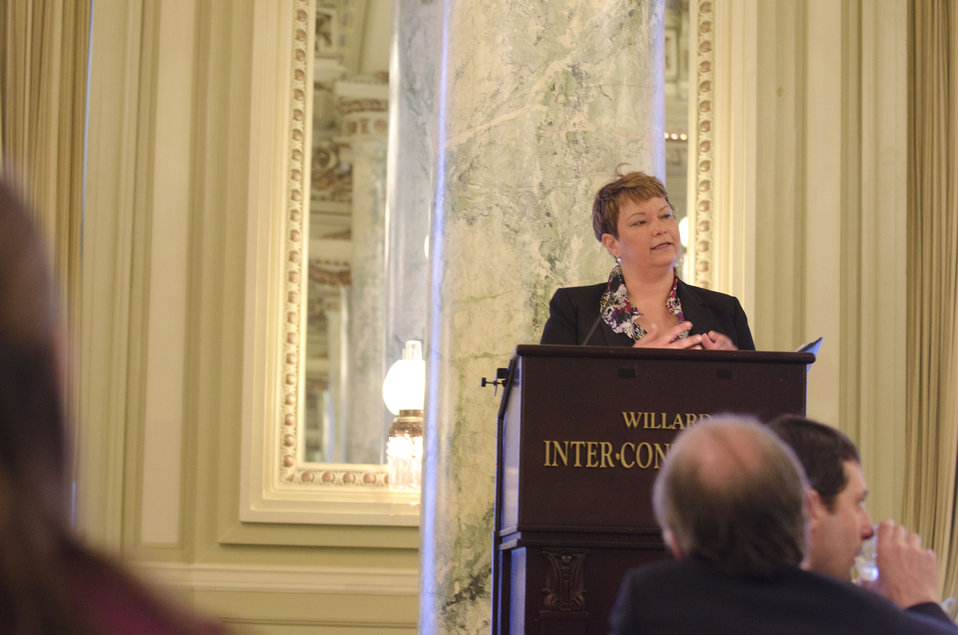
2011-05-05 NRCCCPrayerBreakfast 055

US EPA Administrator Lisa P. Jackson addresses the guests after accepting the Steward of God's Creation Award from the National Religious Coalition on Creation Care.